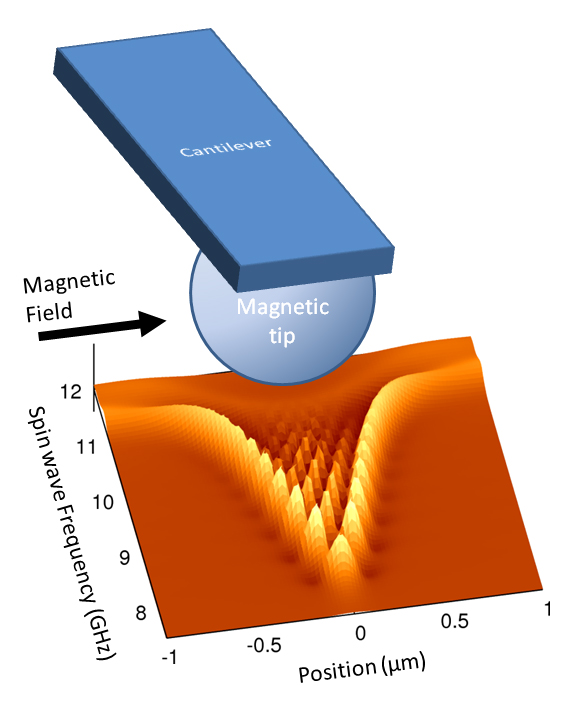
Spin Waves

Trapped beneath the magnetic tip of a microscale cantilever, spin waves can be used to non-destructively measure the properties of magnetic materials and search for nanoscale defects, especially in multilayer magnetic systems like a typical hard drive, where defects could be buried beneath the surface.